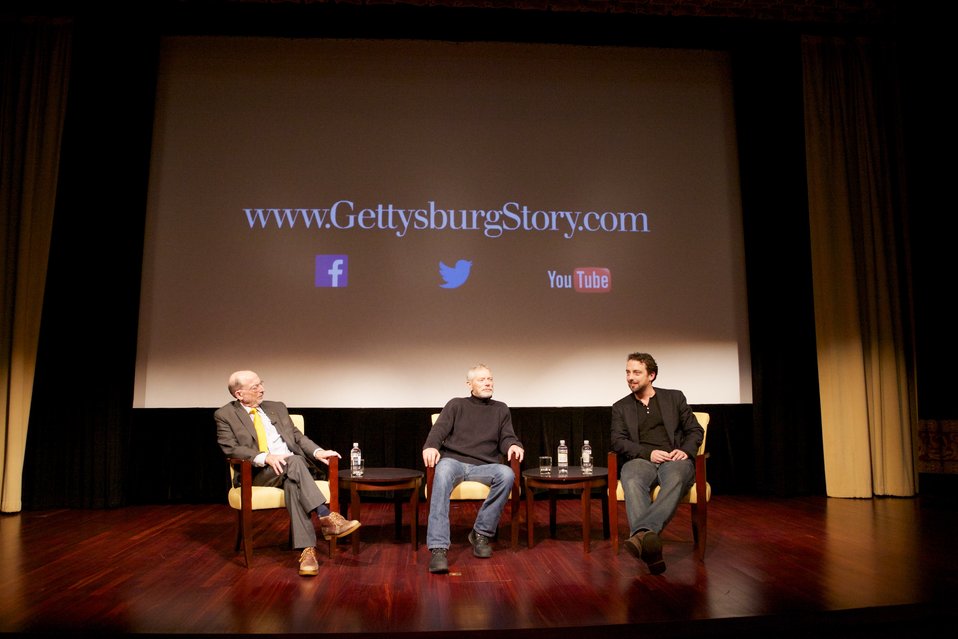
The Gettysburg Story and The Wheatfiled; Jake Boritt (right), filmmaker, Stephen Lang (middle), actor and playwright, and Gabor S. Borit (left), Lincoln and Civil War era scholar, discuss and answer questions about the films The Wheatfield and The Gettysburg Story